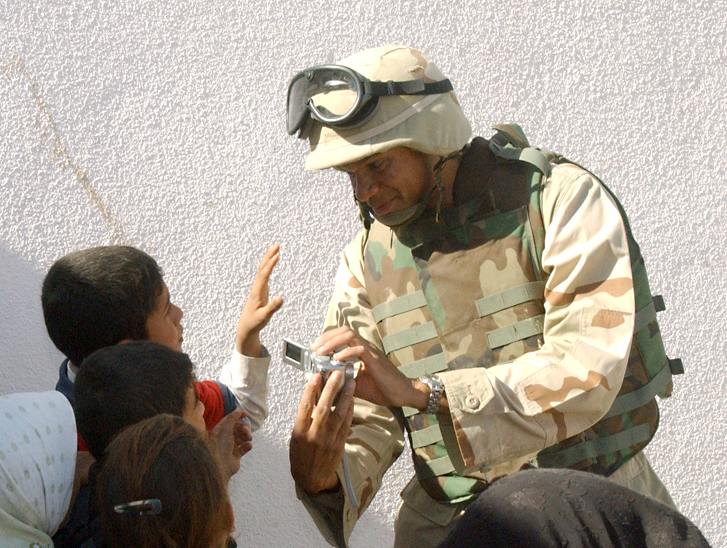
Airmen take part in Operation Pencil Box

NEAR BALAD AIR BASE, Iraq -- First Lt. Yasir Archbold shows students at an elementary school here a photo he took with his digital camera Oct. 24. The visit was part of Operation Pencil Box, a humanitarian project to deliver school supplies to Iraqi children. Lieutenant Archbold is assigned to the 332nd Air Expeditionary Wing plans and programs office at the air base.